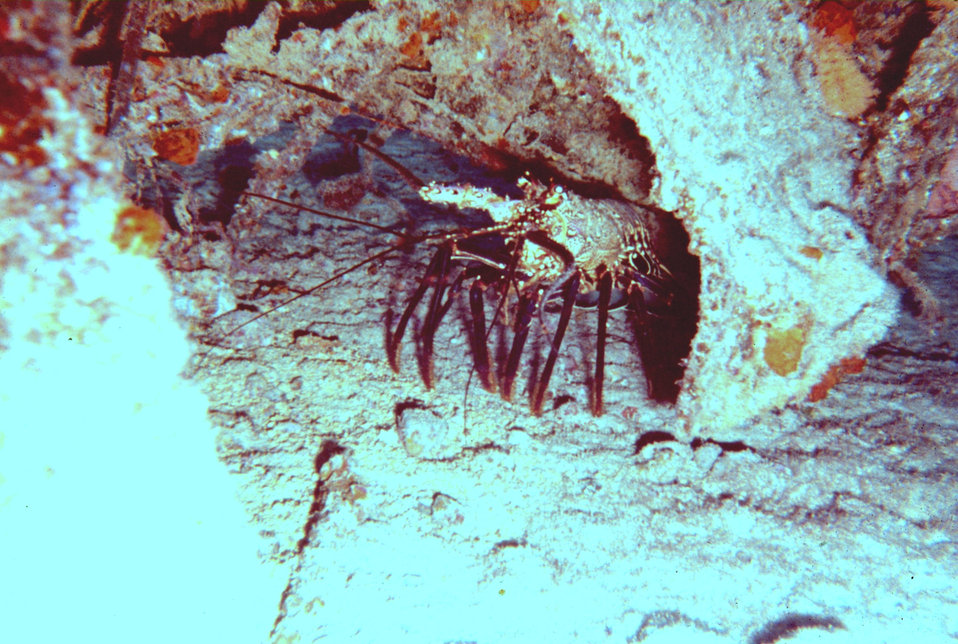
Spiny lobster - Panulirus sp.